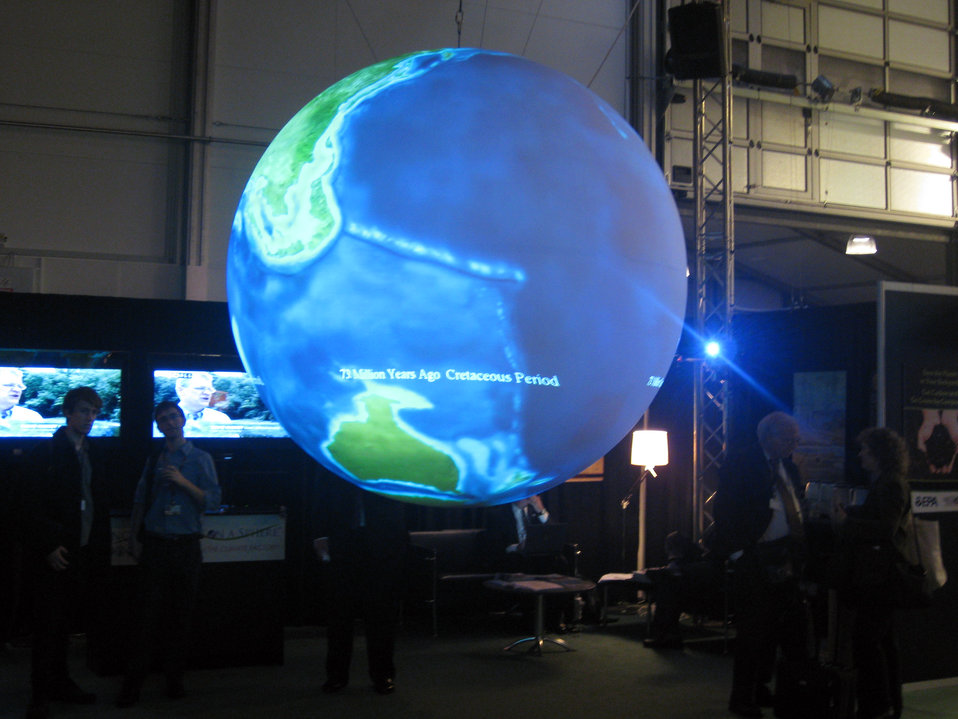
Science on a Sphere at the U.S. Center during COP15 (Conference of the Parties to the UN Framework Convention on Climate Change) in Copenhagen, Denmark December 10, 2009.